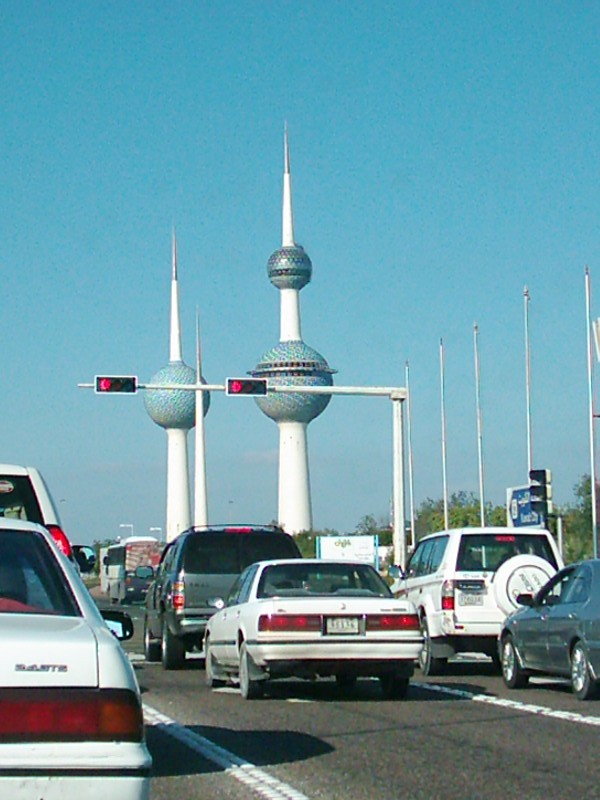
Kuwait Towers